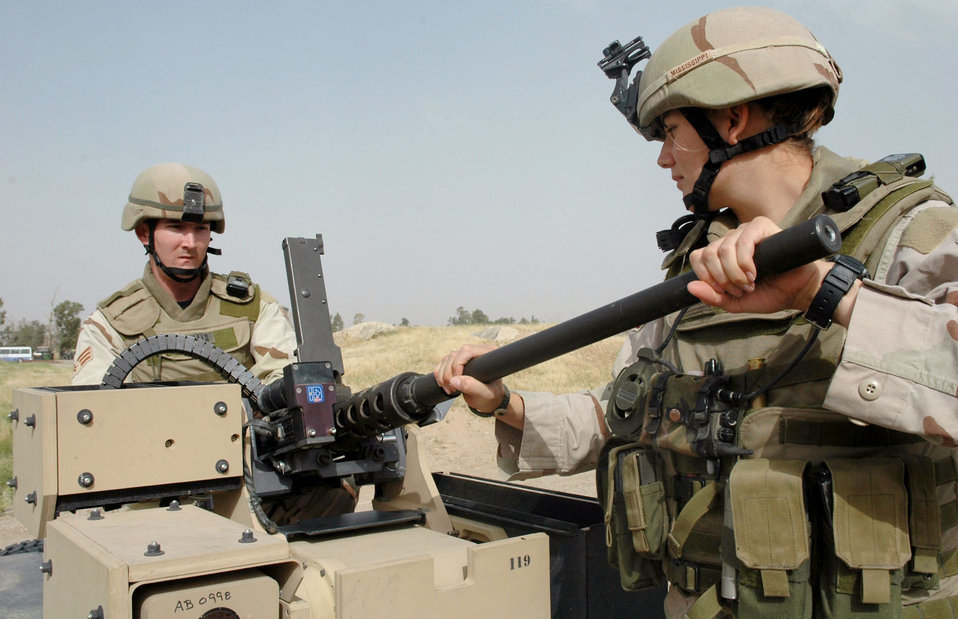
CROWS gets Airmen out of the turret

Senior Airmen Jeffrey Oats and Kesha Snedeker assemble a machine gun attached to the Common Remote Operated Weapon Station, or CROWS, on a Humvee at Kirkuk Air Base, Iraq, on Tuesday, April 25, 2006. The CROWS system takes Airmen out of the gun turret and allows a variety of weapons to be remotely operated from the inside the vehicle. Airmen Oats and Snedeker are assigned to the 506th Expeditionary Security Forces Squadron and are deployed from Moody Air Force Base, Ga.